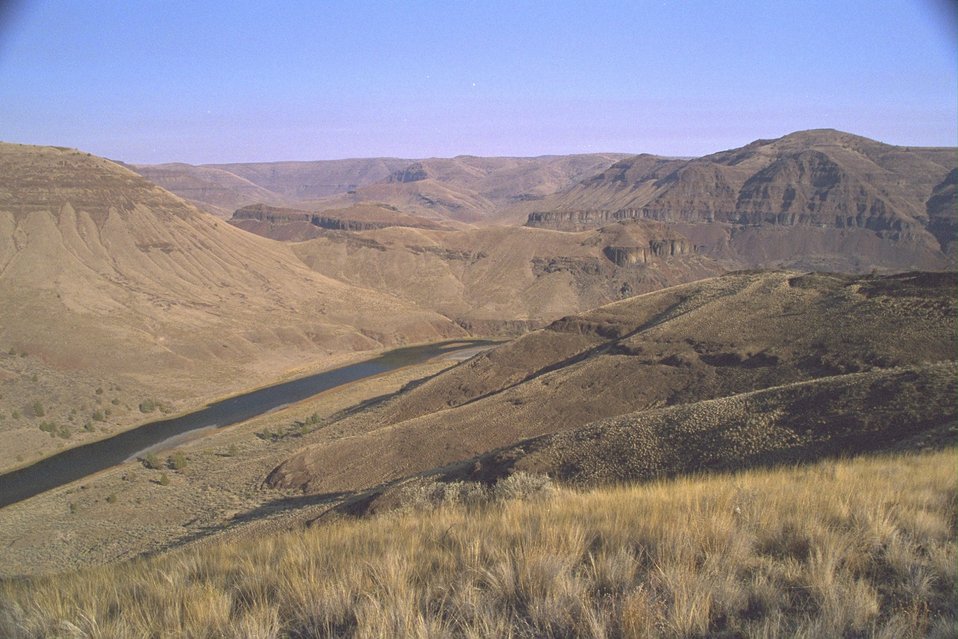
Looking down the John Day River from a viewpoint up in the hills.